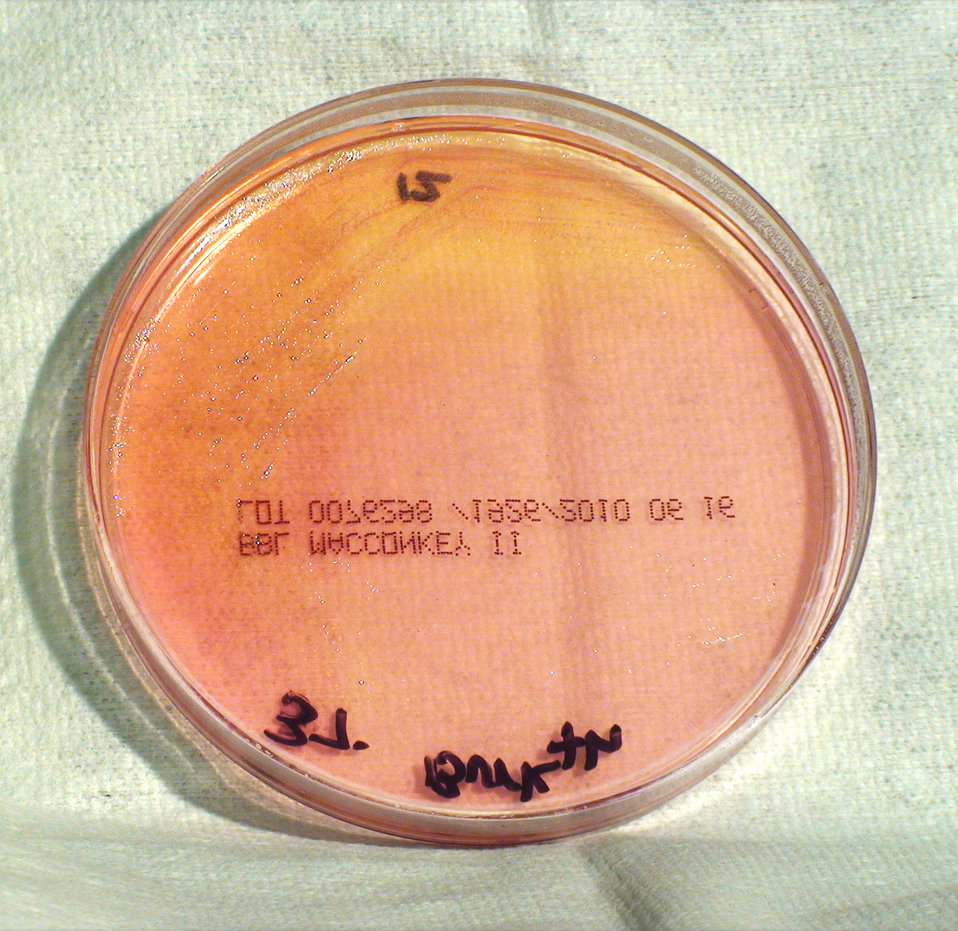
This photograph depicts the colonial morphology displayed by Gram-negative Burkholderia thailandensis bacteria, which was grown on a medium of MacConkey agar, for a 24 hour time period, at a temperature of 37�C. See PHIL 12420, for a closer view of these bacterial colonies. Also, see both PHIL 12405 and 12406, for views of this bacterial specie, grown on the same medium, at the same temperature (37�C), however, at a twice the amount of time (48hr), and note that PHIL 12410 and 12411 depict the same bacterial specie grown on the same media, but at a greater temperature (42�C), and greater time period (48hr). Take a look at PHIL 12427 and 12428 colonial growth, on the same medium and for the same amount of time (24hr), but at a greater temperature (42�C).